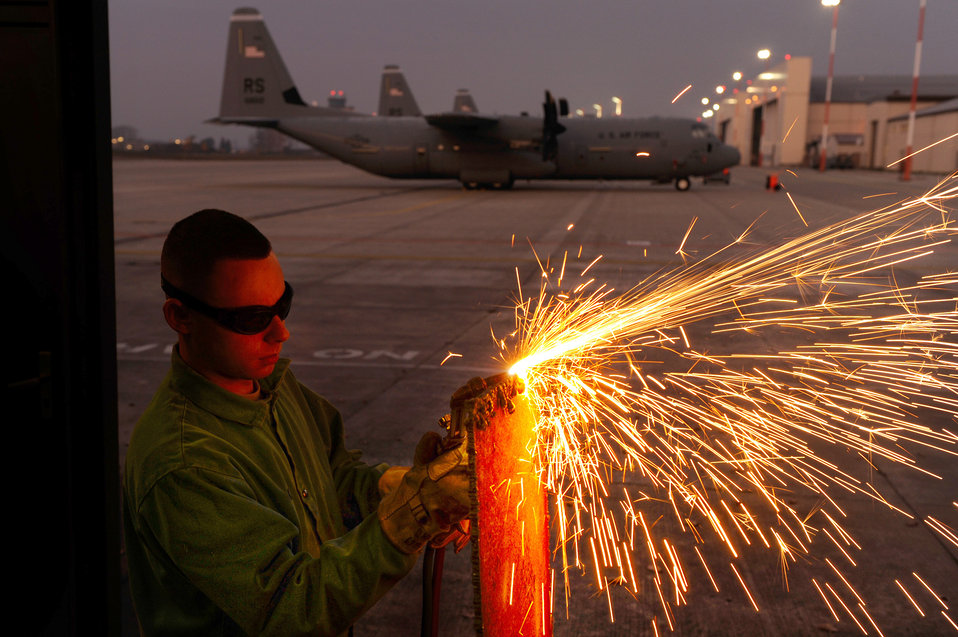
Making the cut

Staff Sgt. Daniel Kay cuts diamond-plate steel with an oxyacetylene torch Nov. 22, 2011, at Ramstein Air Base, Germany. Kay is an aircraft metals technology craftsman assigned to the 86th Maintenance Squadron.